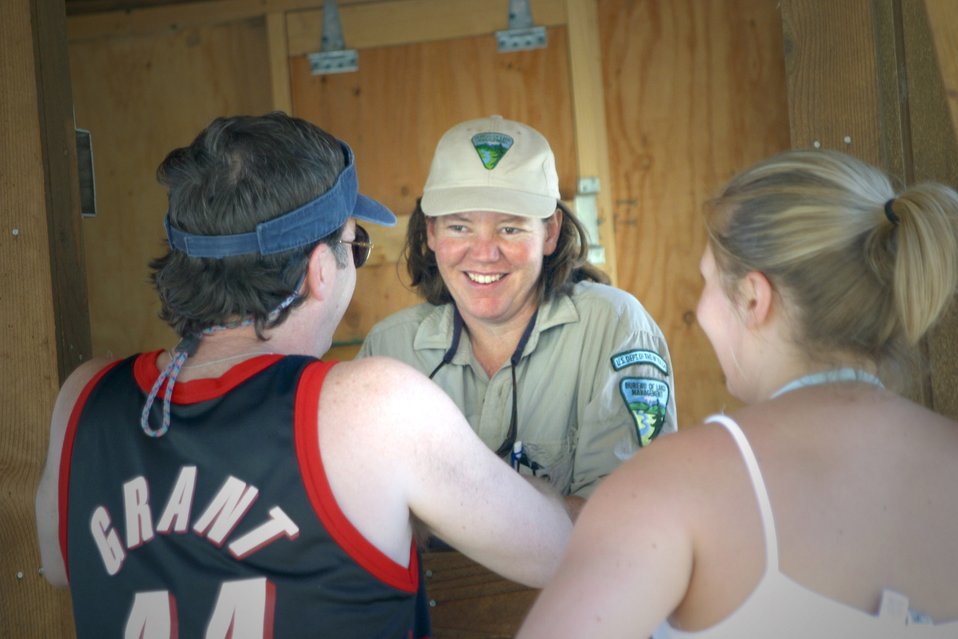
Over 200,000 people a year float the Lower Deshutes River.